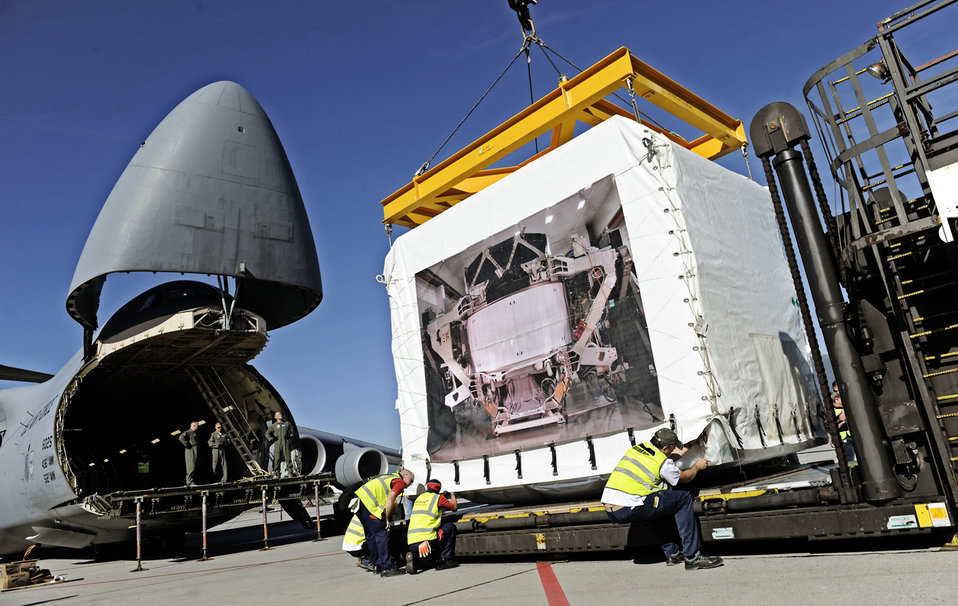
C5M and AMS

A C-5M Super Galaxy, based out of Dover Air Force Base, Del., is loaded with the Alpha Magnetic Spectrometer Aug. 25, 2010, at the Geneva airport. The AMS is the brain child of Nobel laureate, Dr. Samuel Ting and has been in production for 16 years. The purpose of the experiment is to detect and analyze particles found in space while docked to the International Space Station.